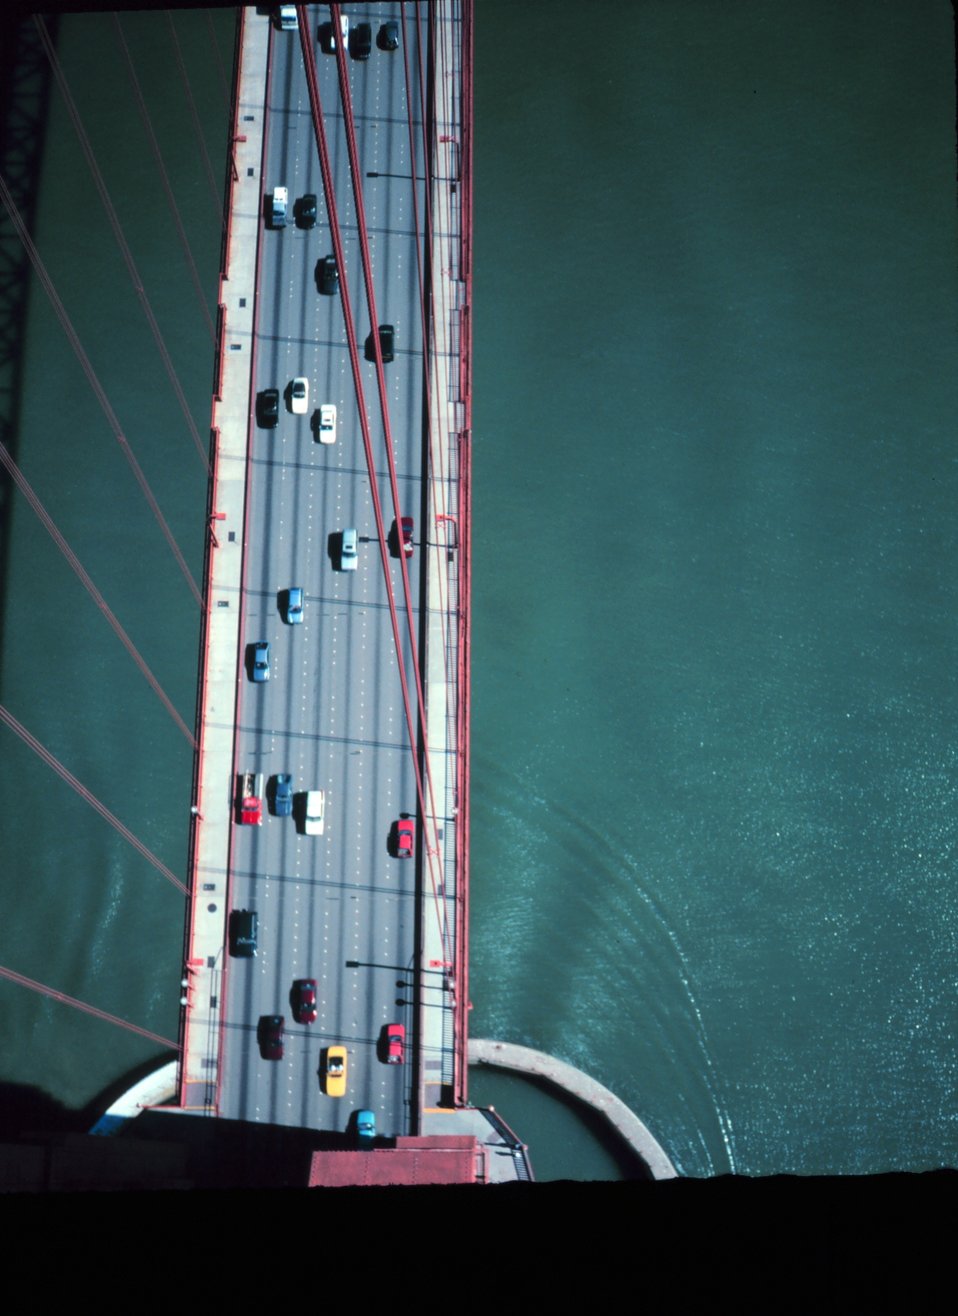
View from the top of the south tower of the Golden Gate Bridge looking down onto the deck of the bridge. The surface of the water is more than 700 feet below.